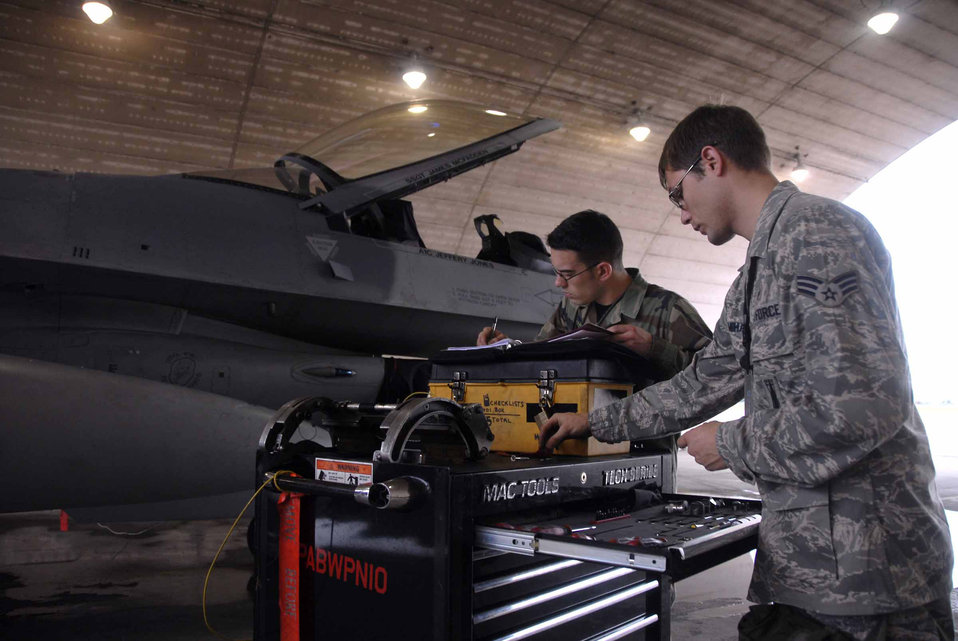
Osan exercise tests Airmen

OSAN AIR BASE, Republic of Korea -- (From right to left) Airman 1st Class John Bumbalough and Senior Airman Mark Mihasci record information and perform a tools inspection here July 21, after preparing an F-16 aircraft for an upcoming mission. Both Airmen are Weapons Armament Specialists assigned to the 51st Aircraft Maintenance Squadron.